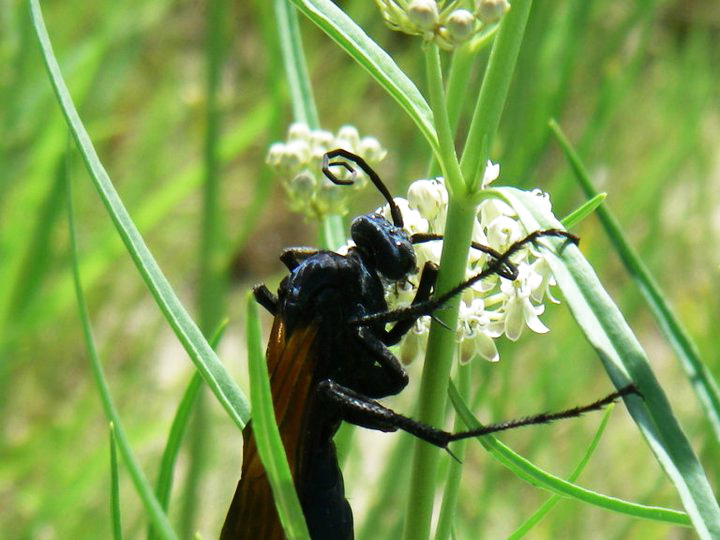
Tarantula Hawk

Dexter National Fish Hatchery and Technology Center